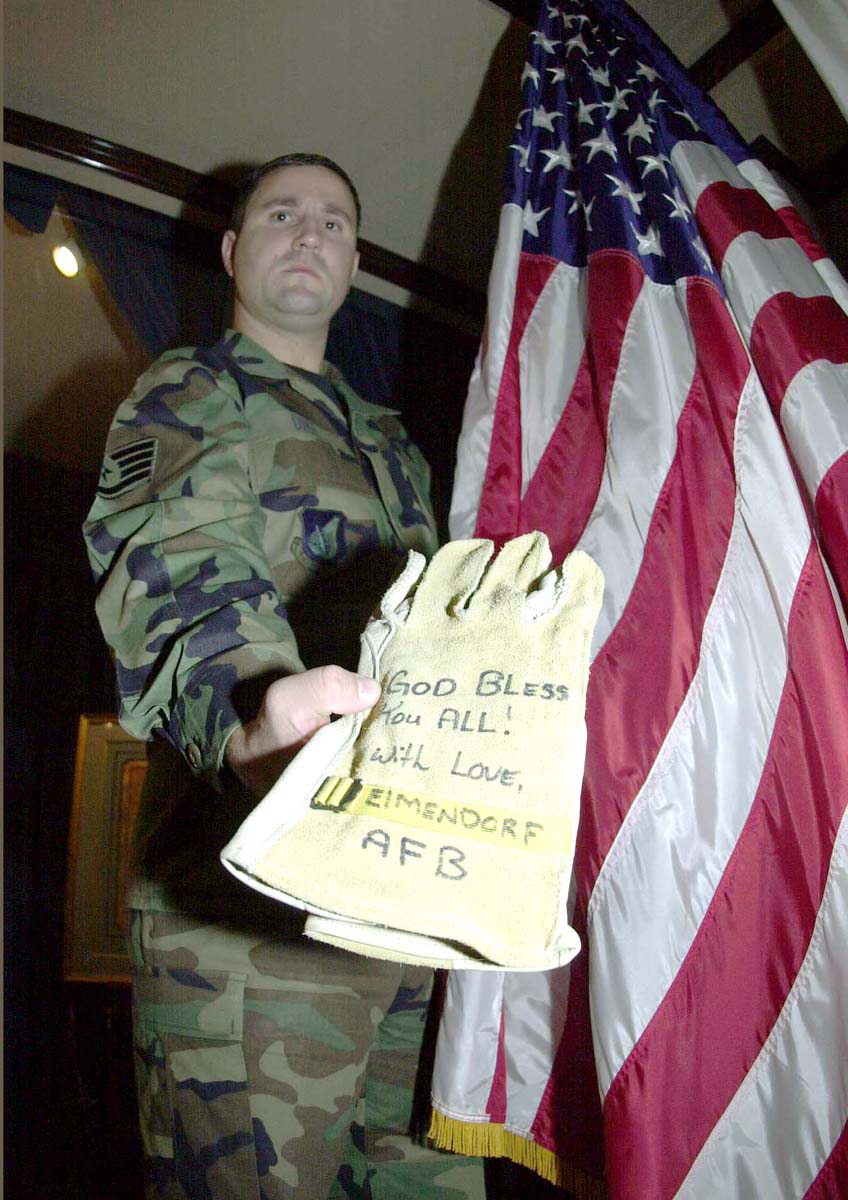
Gloves

ELMENDORF AIR FORCE BASE, Alaska -- Staff Sgt. Justin Dike, a protocol noncommissioned officer, led a project that yielded more than 1,200 pairs of gloves for relief workers at the World Trade Center in New York City.